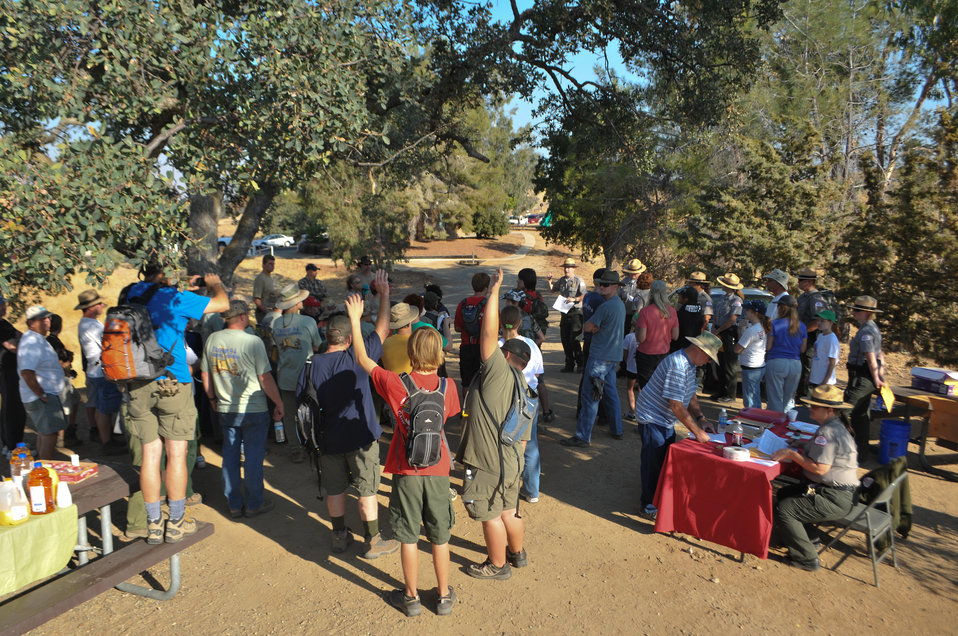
HENSLEY LAKE, Calif. (Sept. 25, 2010) – Volunteers receive a briefing from park rangers prior to participating in park improvement projects here as part of National Public Lands Day Sept. 25. More than 110 volunteers helped Hensley staff remove litter, repair trail erosion, clean the swimming beach and paint and clean signs throughout the park.